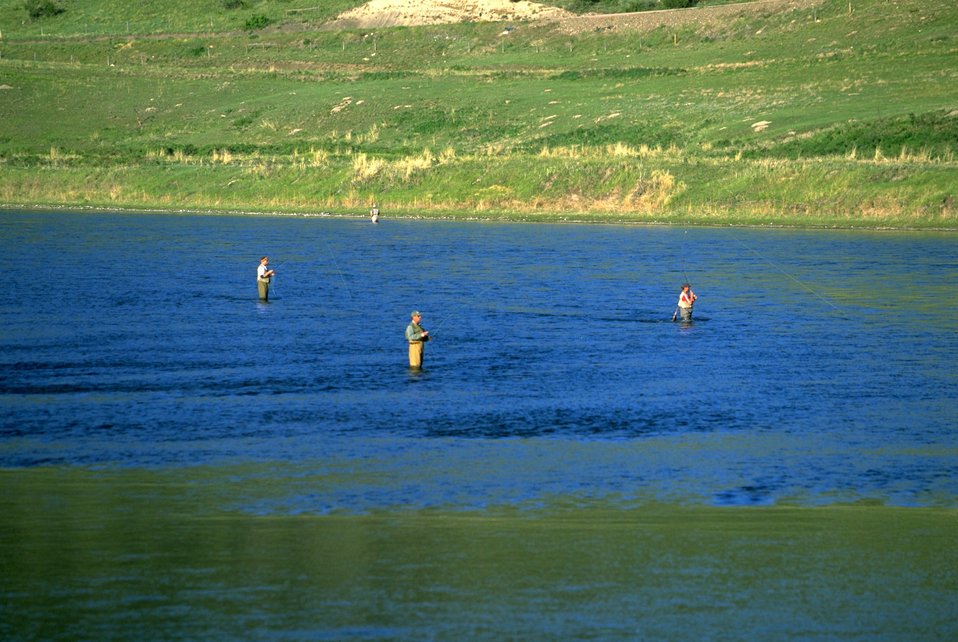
Looking for the big one! Fly fishing on the Missouri